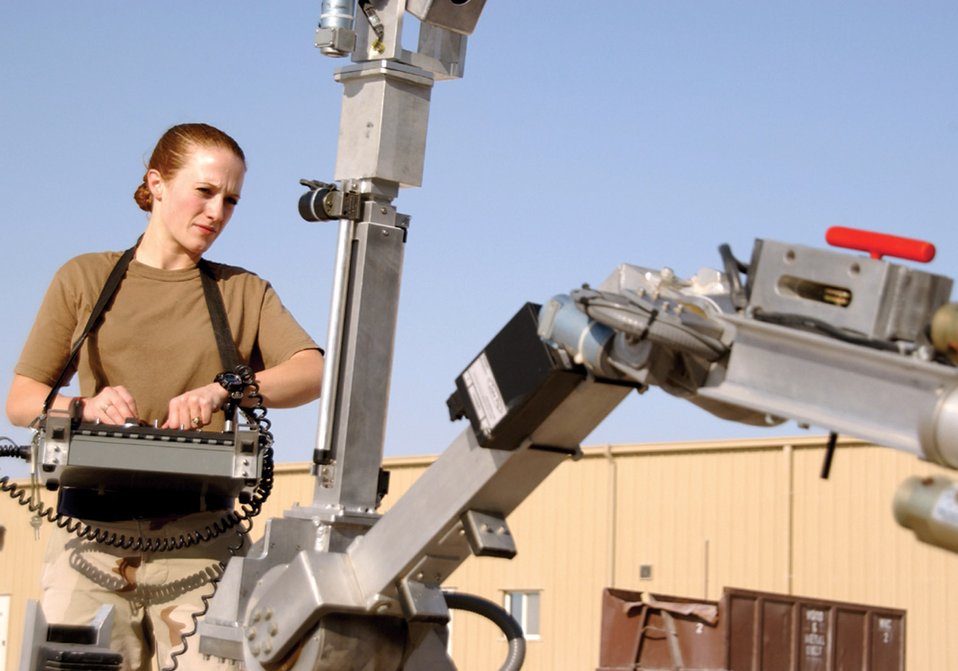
Detection, deterrence

SOUTHWEST ASIA (AFPN) -- Staff Sgt. Lindsey Leitz demonstrates how to use the explosive ordnance disposal Andros MK V robot. The remote-controlled bomb disposal unit uses devices to remotely open vehicles and pull items out of vehicles. Sergeant Leitz is with the 379th Expeditionary Civil Engineering Squadron explosive ordnance disposal unit at this base.